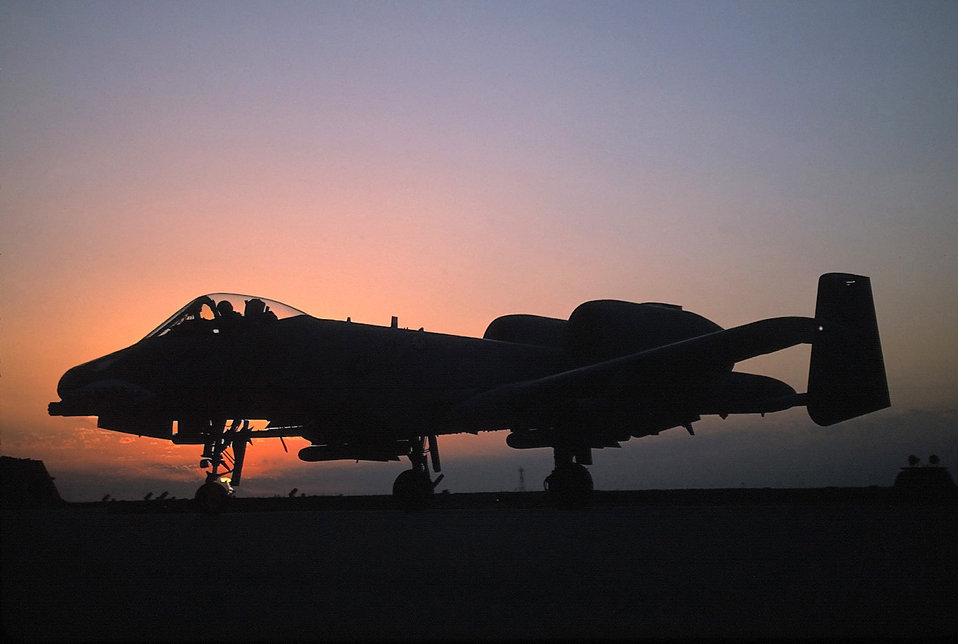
A/OA-10 Thunderbolt II

The A/OA-10 Thunderbolt II is the first Air Force aircraft specially designed for close air support of ground forces. They are simple, effective and survivable twin-engine jet aircraft that can be used against all ground targets, including tanks and other armored vehicles. The A-10/OA-10 have excellent maneuverability at low air speeds and altitude, and are highly accurate weapons-delivery platforms. They can loiter near battle areas for extended periods of time and operate under 1,000-foot ceilings (303.3 meters) with 1.5-mile (2.4 kilometers) visibility. Their wide combat radius and short takeoff and landing capability permit operations in and out of locations near front lines. Using night vision goggles, A-10/ OA-10 pilots can conduct their missions during darkness. Thunderbolt IIs have Night Vision Imaging Systems (NVIS), goggle compatible single-seat cockpits forward of their wings and a large bubble canopy which provides pilots all-around vision. The pilots are protected by titanium armor that also protects parts of the flight-control system. The redundant primary structural sections allow the aircraft to enjoy better survivability during close air support than did previous aircraft.